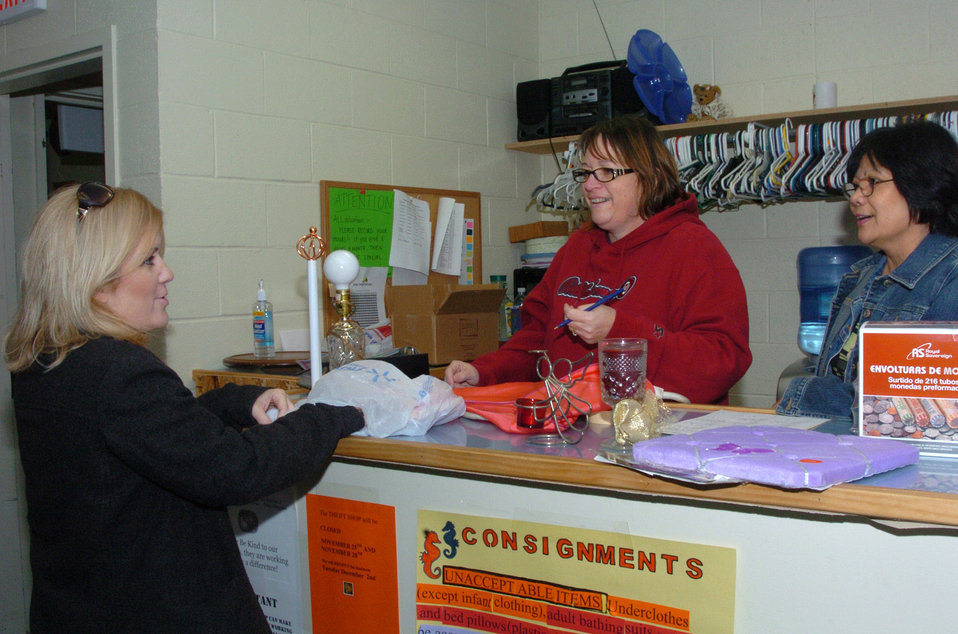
Healthier through helping: Volunteerism adds to life

Shelly Slate (from left to right), Linda Eger and Merlie Biggs chat about thrift shop issues as they volunteer their time at Altus Air Force Base, Okla. Profits from the store support an educational scholarship program.